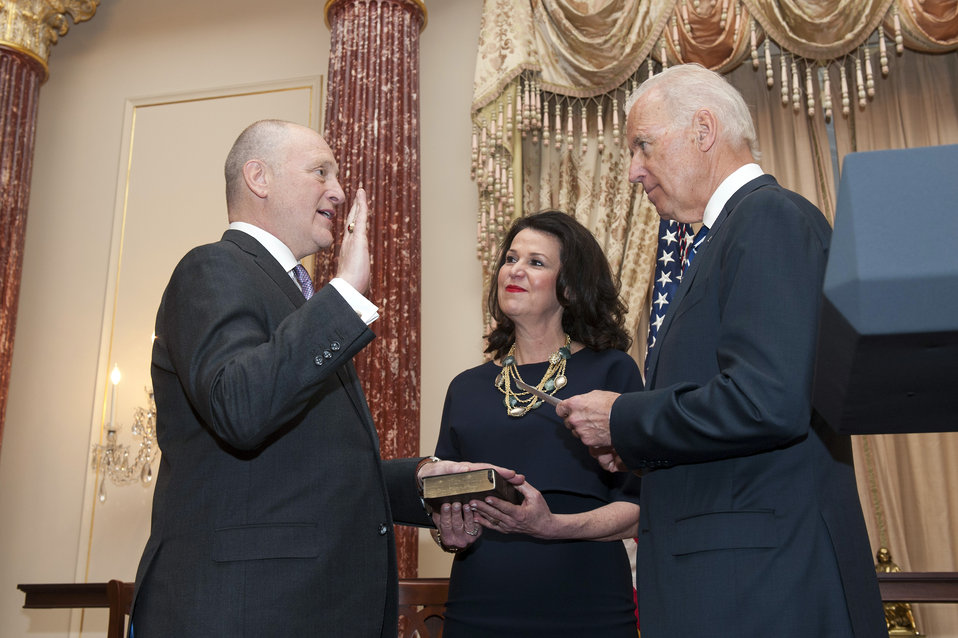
Vice President Biden Swears in Bruce Heyman as the U.S. Ambassador to Canada

Vice President Joe Biden swears in Bruce Heyman as the U.S. Ambassador to Canada at the U.S. Department of State in Washington, D.C., on March 26, 2014.